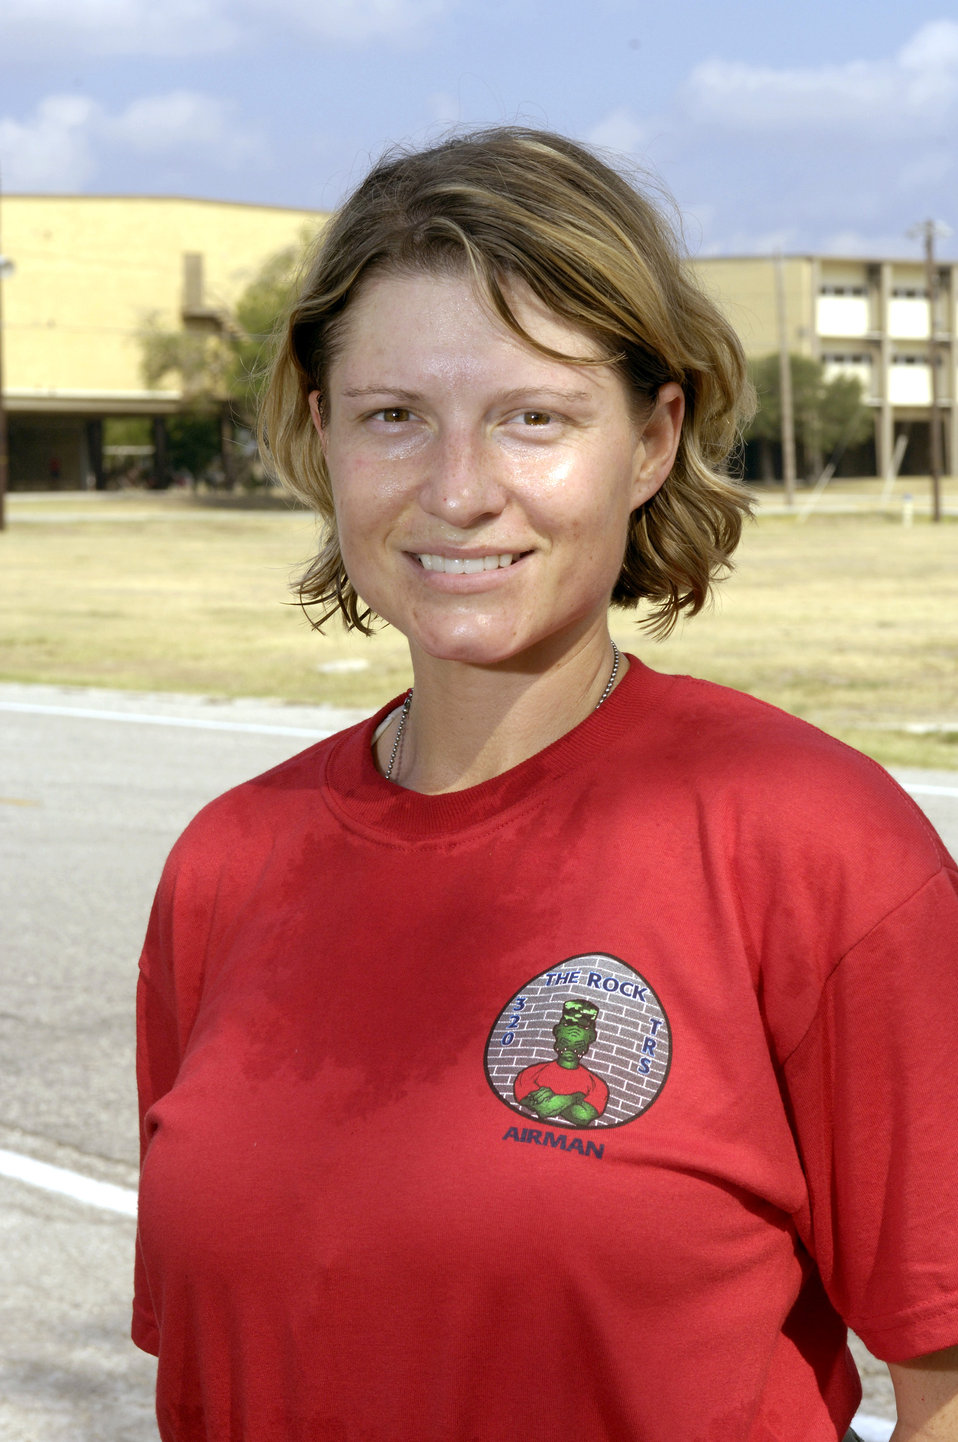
Basic training grads say 4th of July feels different now

Airman 1st Class Samantha Riddle graduated from basic military training at Lackland Air Force Base, Texas, on Friday, June 30. The Airman had completed a two-and-one-half-mile run June 29. Last year, she spent the Fourth of July holiday floating down a river and watching fireworks.